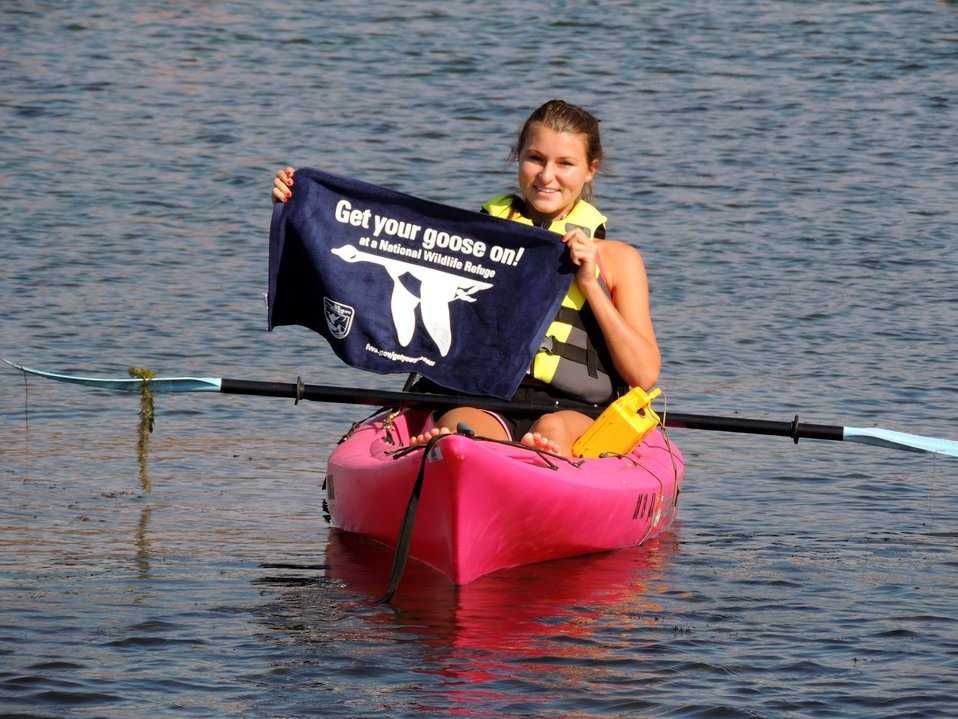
Get Your Goose On!

Wichita Mountains National Wildlife Refuge in Oklahoma.